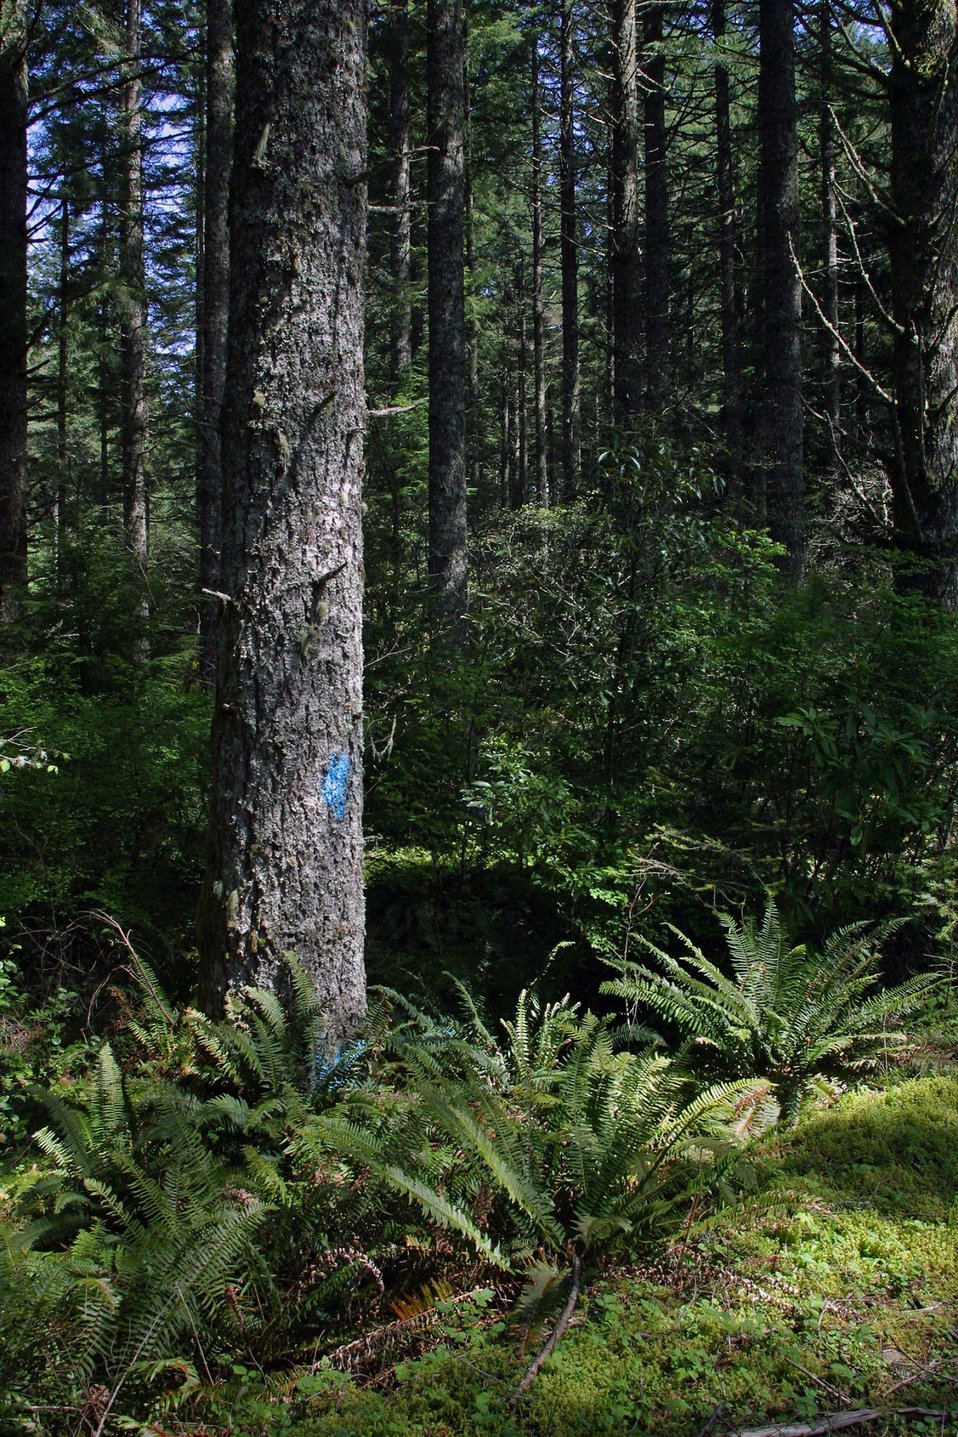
BLM forest lands in the Santiam watershed.